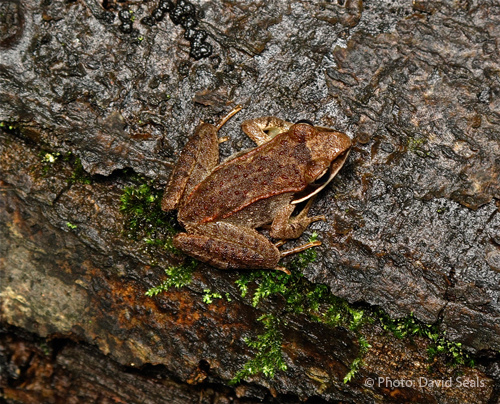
Frog in Disguise

This wood frog wears a characteristic 'robber's mask' as it huddles against a dark, damp background. The patch extends backward from the eyes and distinguishes the wood frog from others.